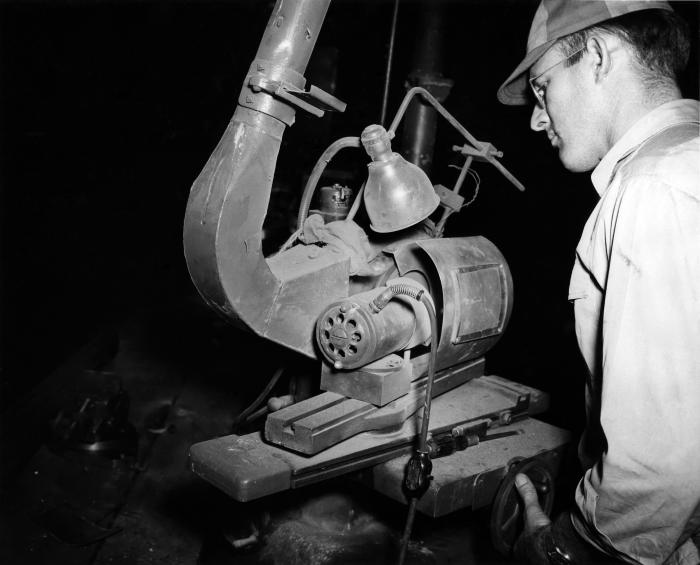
From approximately 1940, this historical photograph was provided by the Center for Disease Control's (CDC), National Institute for Occupational Safety and Health (NIOSH). The worker depicted here, was stationed at a small hooded grinding machine that had been equipped with an exhaust ventilator. The need for a ventilated system was paramount when providing a safe, non-contaiminated workspace, keeping potentially harmful airborne particulates at a minimum. In the 1940s, the Industrial Hygiene Division (IHD) investigated hazards associated with this, and other activities associated with harardous workplace scenarios.The potential health problems associated with industrial metal grinding include respiratory and dermatologic hazards from inhalation and contact with not only metallic particulates, but fungi- and bacteria-contaminated synthetic metal-working fluids in the form of oil mists.